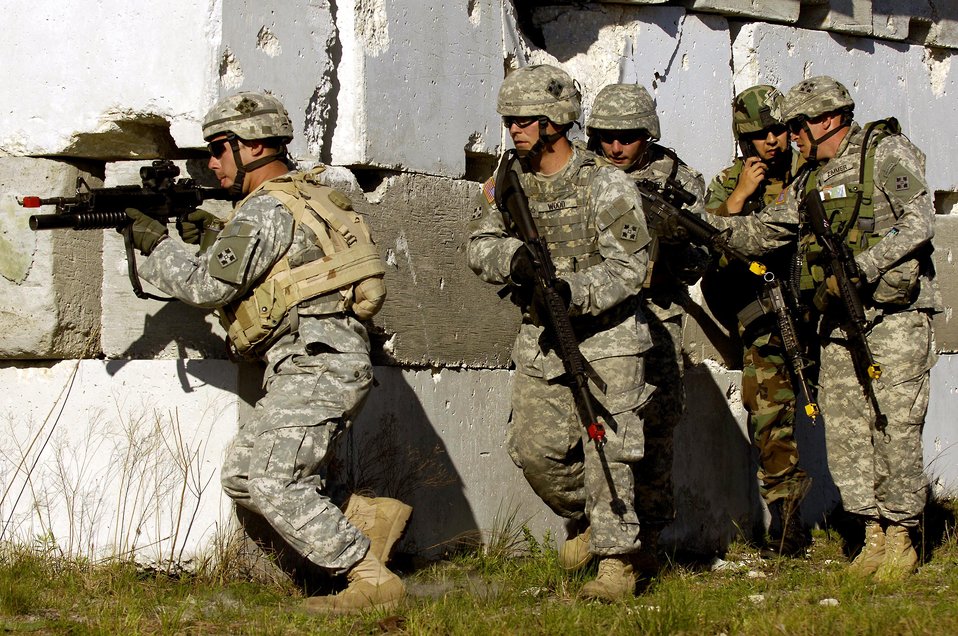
Atlantic Strike V begins in Avon Park

An Air Force joint terminal attack controller integrates with 4th Infantry Division Soldiers from Fort Hood, Texas, to receive an intelligence briefing before participating in Atlantic Strike V April 16 at Avon Park, Fla. Atlantic Strike is a joint forces training event involving JTACs from the Army, Air Force and Marines and is held semi-annually at the Avon Park Air Ground Training Complex.